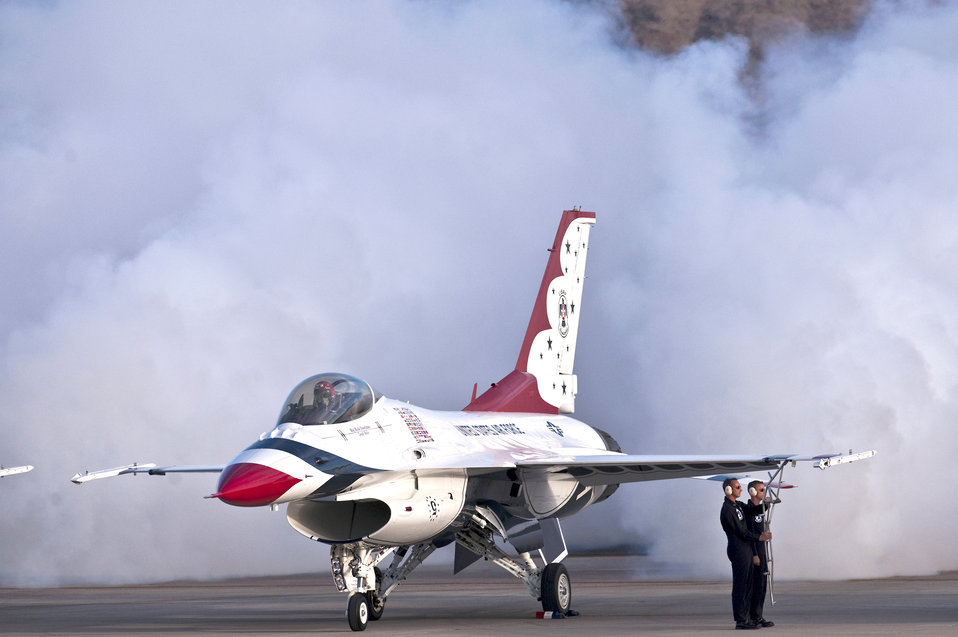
It's all smoke...

Maj. Rick Goodman, lead solo with the Air Force Air Demonstration Squadron, the Thunderbirds, releases smoke and as he prepares to exit his F-16 Fighting Falcon at the 2010 air show at Nellis Air Force Base, Nev., Nov. 14, 2010. The open house is the final air show of the year for the squadron.